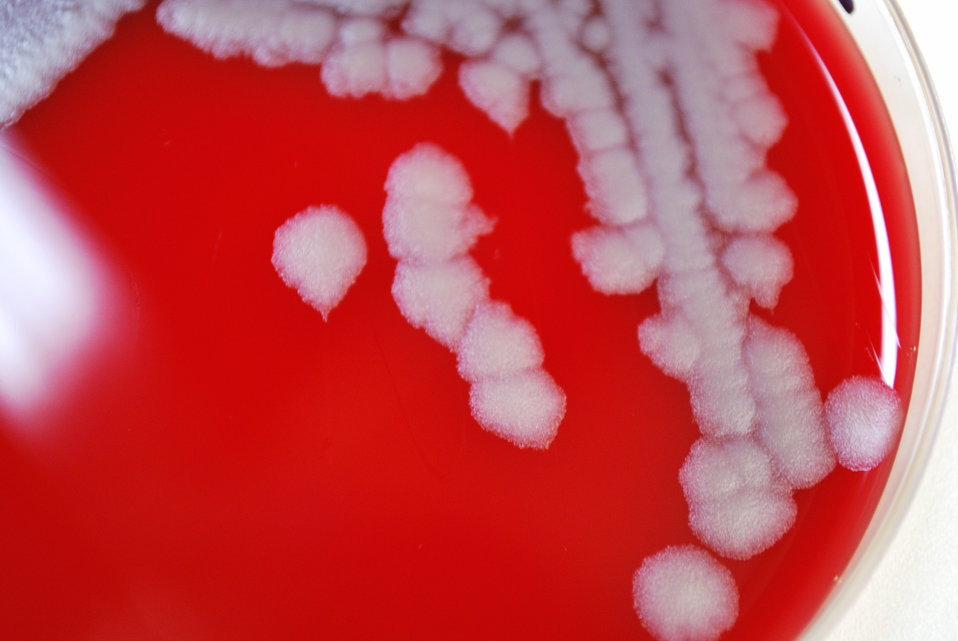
This image depicted numbers of Bacillus anthracis bacterial colonies, which had been allowed to grow on sheep's blood agar (SBA) for a 24 hour period. Note the classical appearance exhibited in the colonial morphology including a ground-glass, non-pigmented texture with accompanying 'comma' projections from some of the individual rough-edged colonies.What is anthrax?